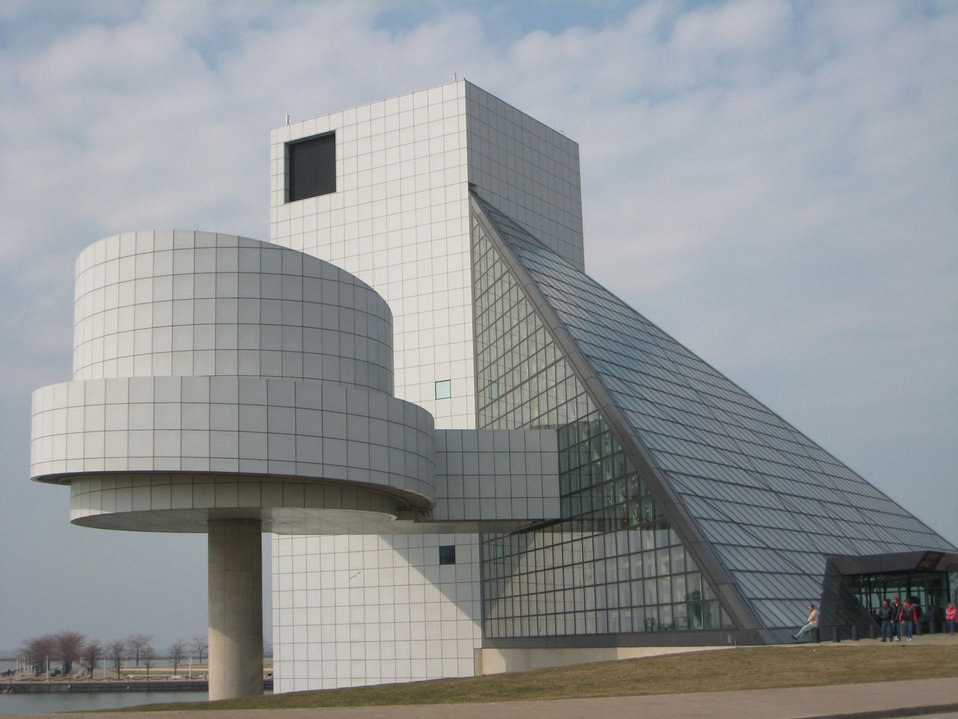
Modern building architecture of building in cleveland.